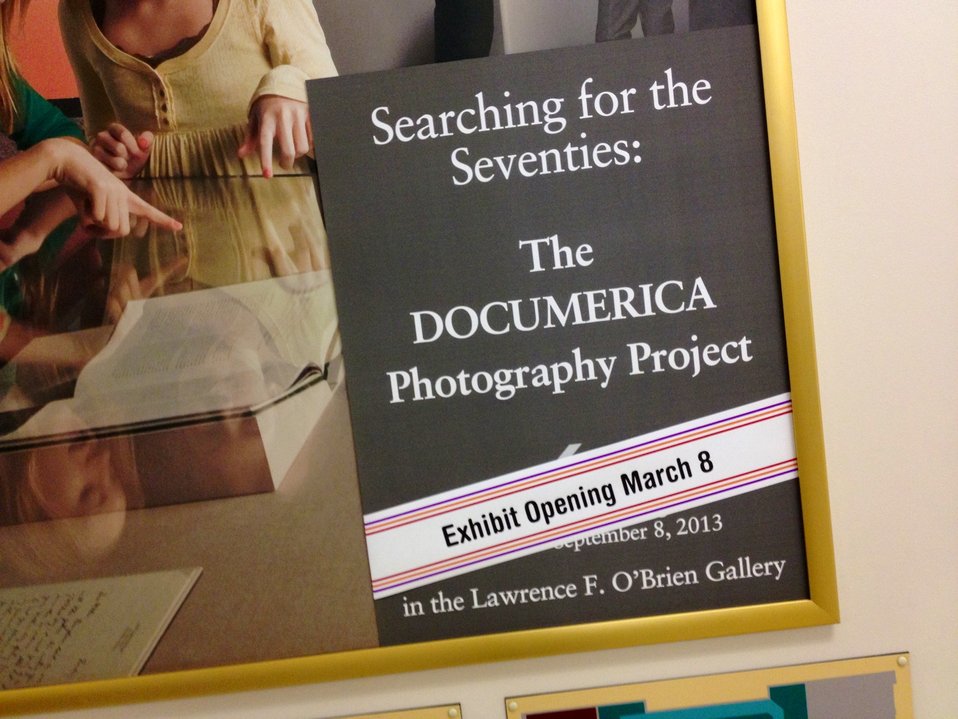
Documerica Lobby Sign

Coming Soon 'Searching for the Seventies: The Documerica Photography Project' opens March 8 in the O'Brien Gallery at the National Archives.